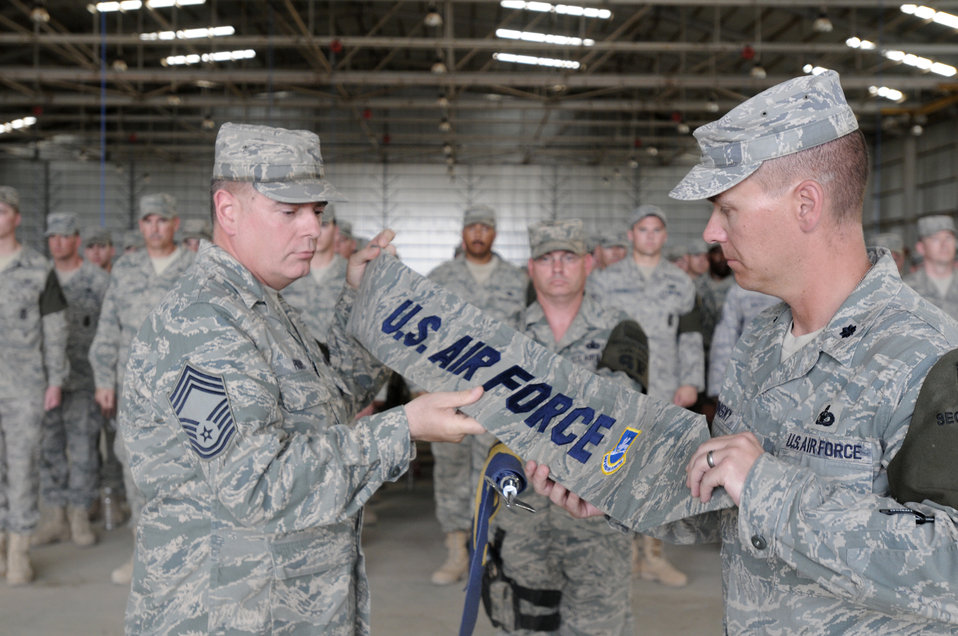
Air Force security transfers authority to Army

Chief Master Sgt. David Provo and Lt. Col. Theodore Ruminsky case the 506th ESFS squadron guidon for the final time during a transfer of authority ceremony May 28, 2010, at Kirkuk Regional Air Base, Iraq. Members of the 506th ESFS transferred base security to the Army 1st Special Troops Battalion. In addition to the transfer of authority, the 506th ESFS was officially inactivated. Chief Provo is the 506th Expeditionary Security Forces Squadron chief enlisted manager. Colonel Ruminsky is the 506th ESFS commander.